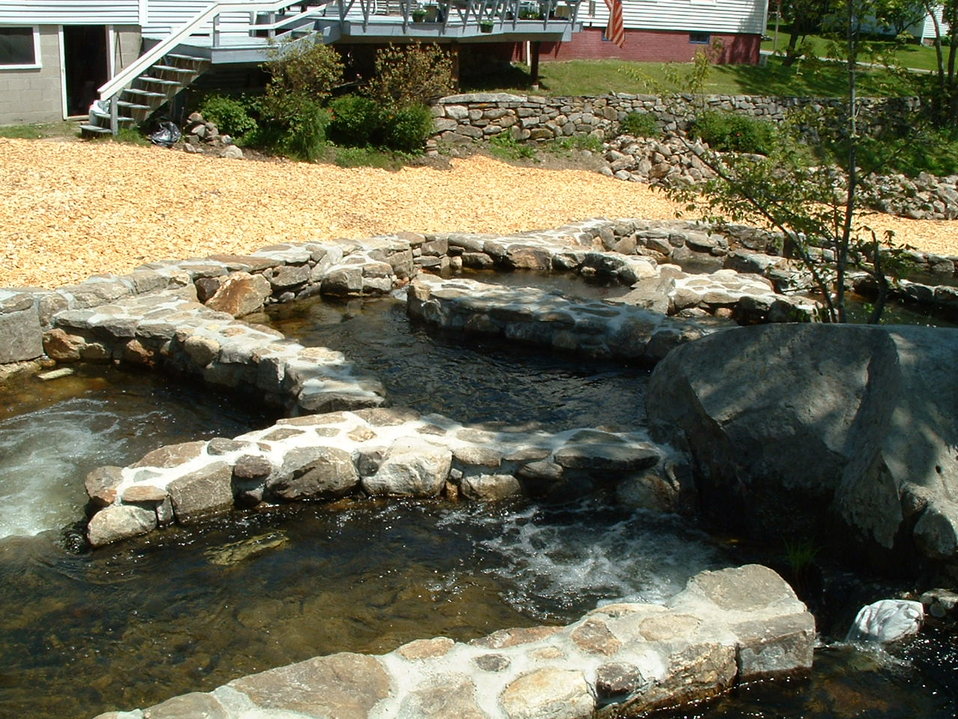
Pool and weir ladder 3